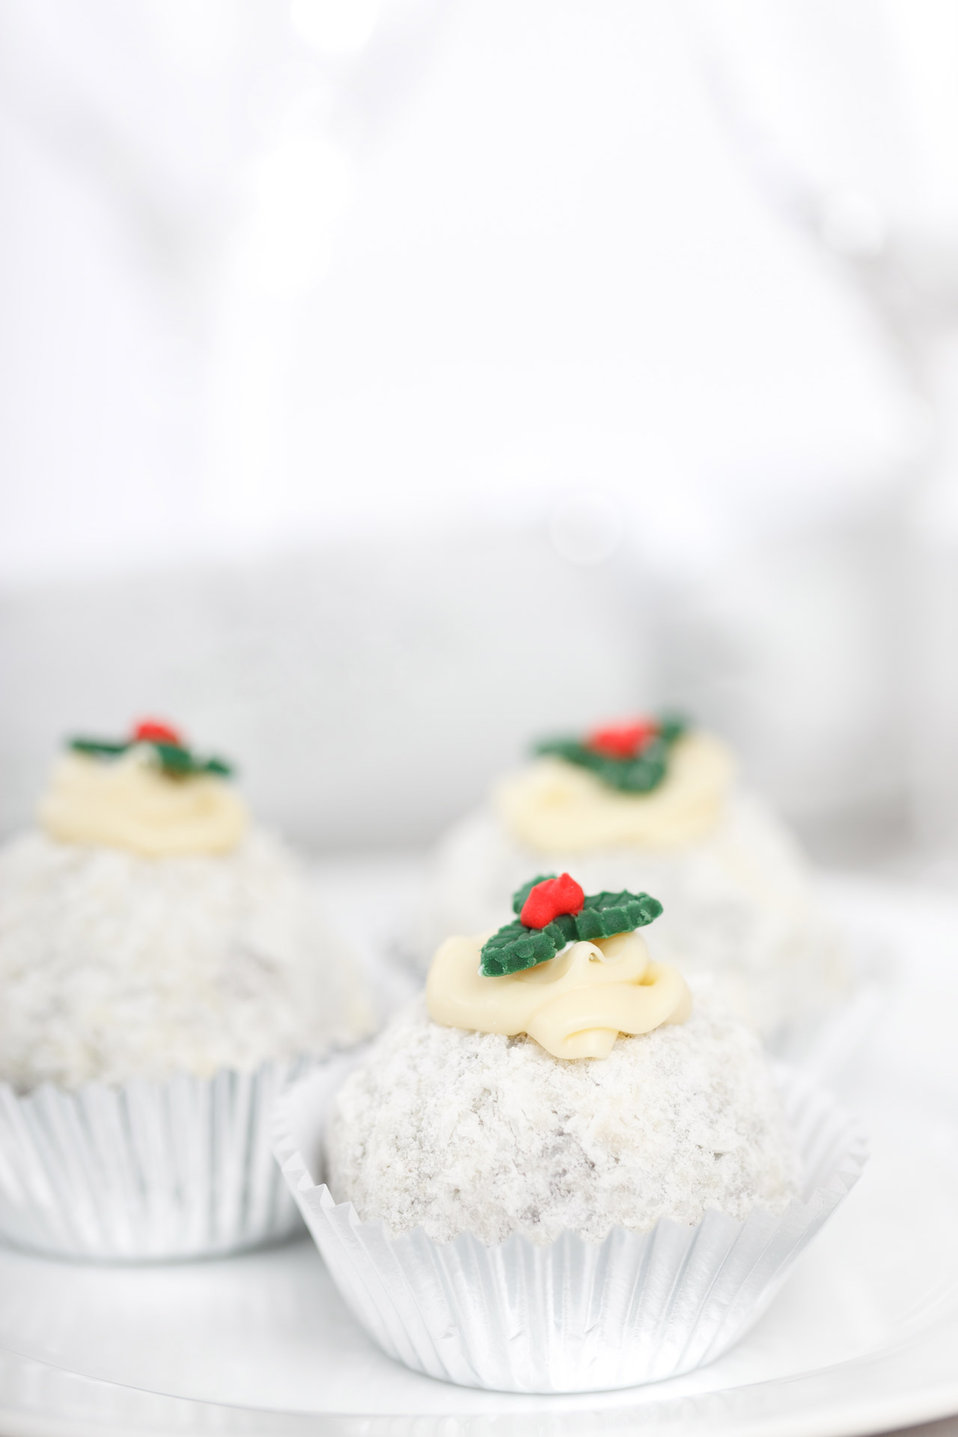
Christmas cake with holly

Round christmas dessert with coconut and a holly on the top.